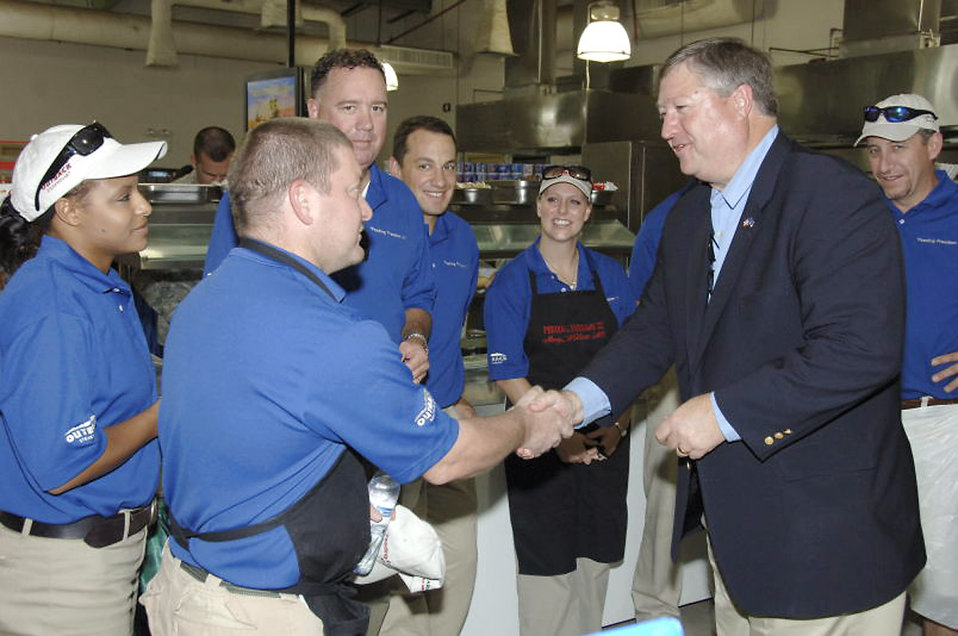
SECAF gains insight into diverse missions at deployed wing

Secretary of the Air Force Michael B. Donley expressed his gratitude to members of Outback Steakhouse at an air base in Southwest Asia Oct. 12. Volunteers from Outback Steakhouse visited several bases in Southwest Asia to bring a little taste of home to the deployed troops to thank them for their service. The secretary told the volunteers how much it means to the troops to have great support from home while deployed so far away from loved ones.